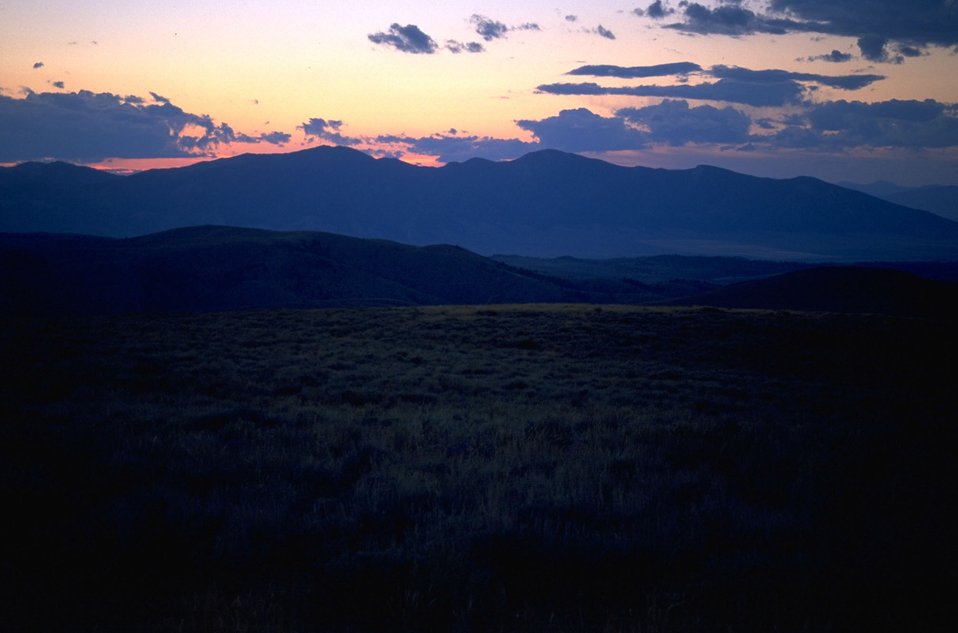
An evening sky